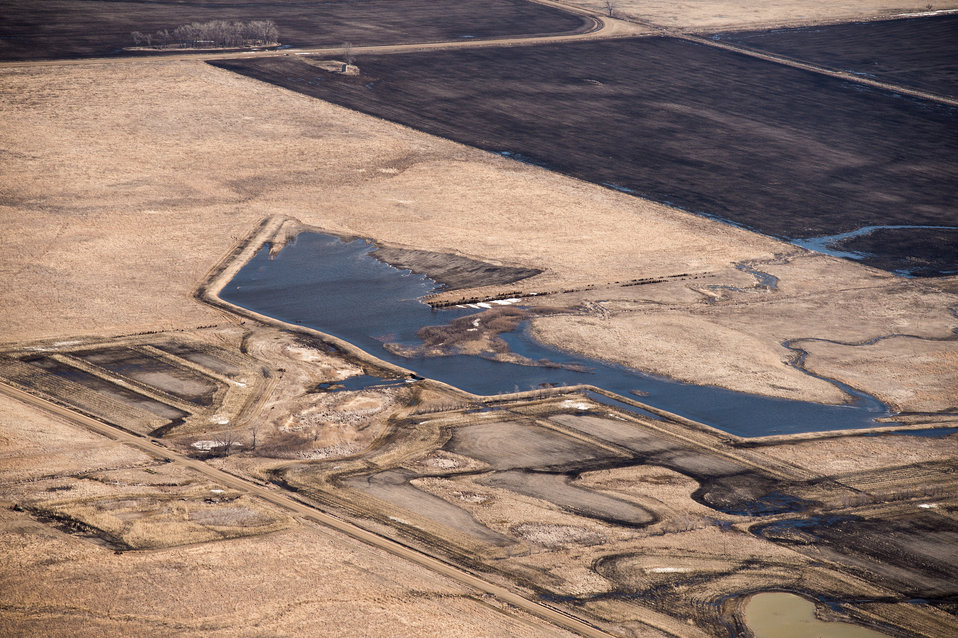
Ehlert North U.S. Department of Agriculture (USDA) Natural Resources Conservation Service (NRCS) Wetland Reserve Program (WRP) in Wilkin County, MN, on Tuesday, April 30, 2013. For information about this and other programs from the USDA Red River Basin Initiative (RRBI) please see www.mn.nrcs.usda.gov/news/features13/RRBI.html.